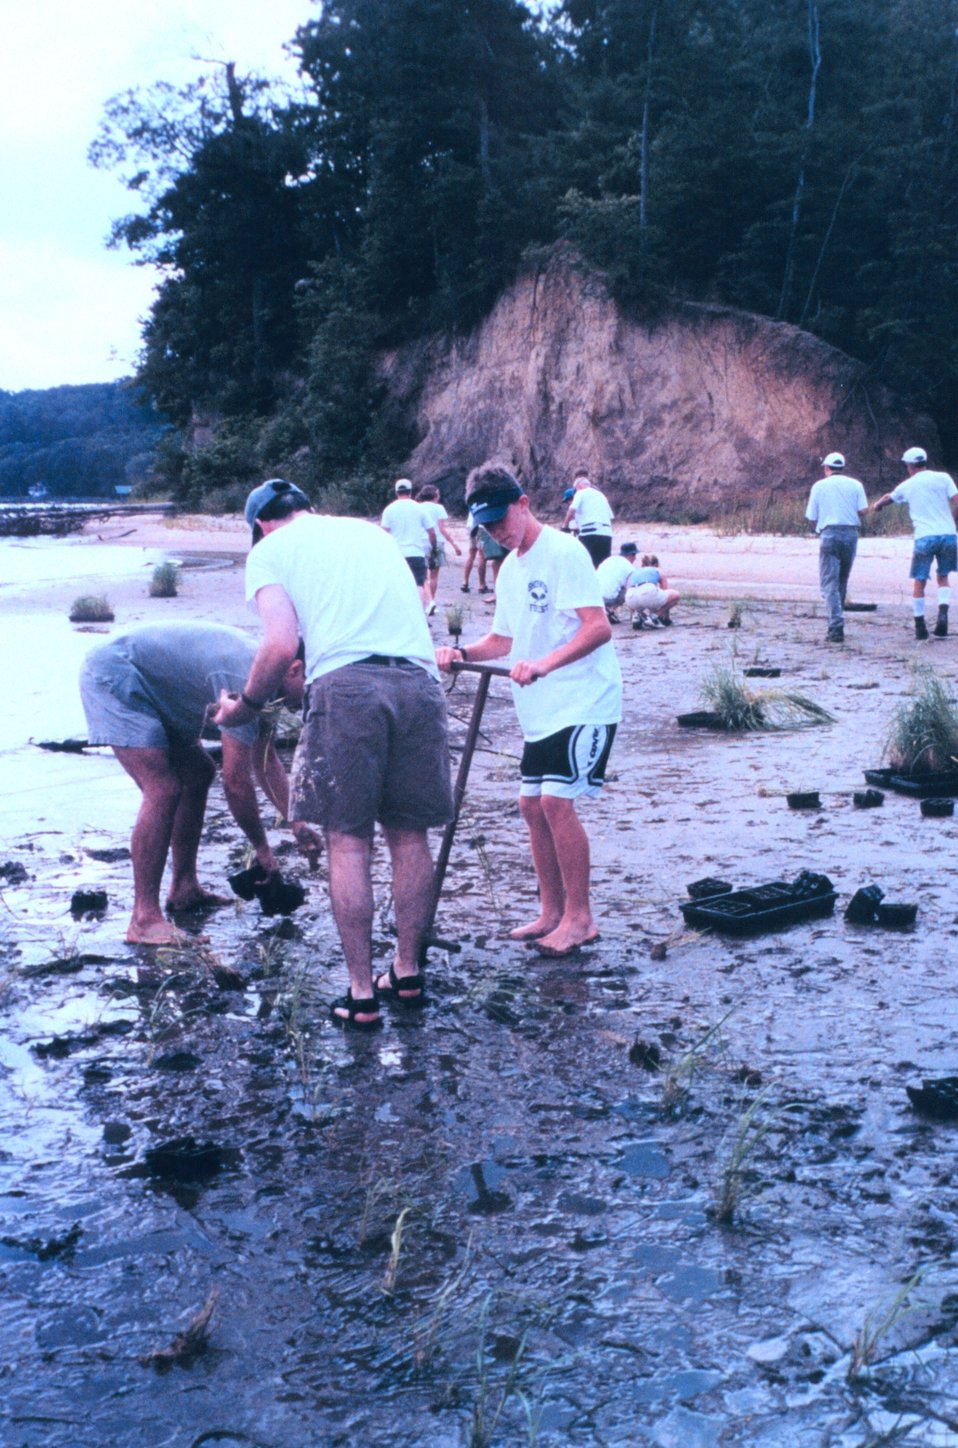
Efforts to preserve shoreline along the Severn River include replanting of marsh grass.